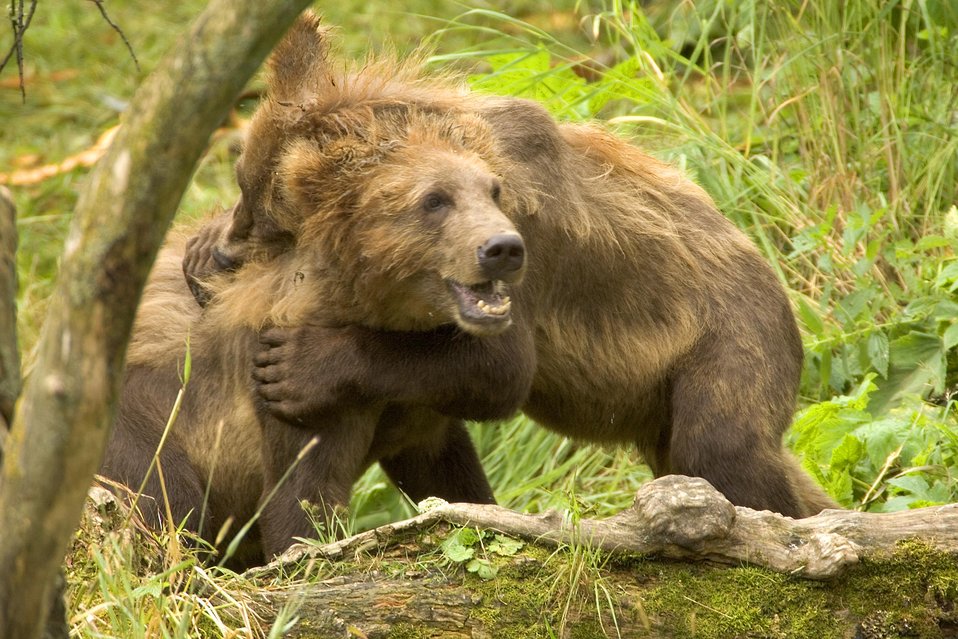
Brown bear cubs playing

This image was taken within the Kodiak National Wildlife Refuge between